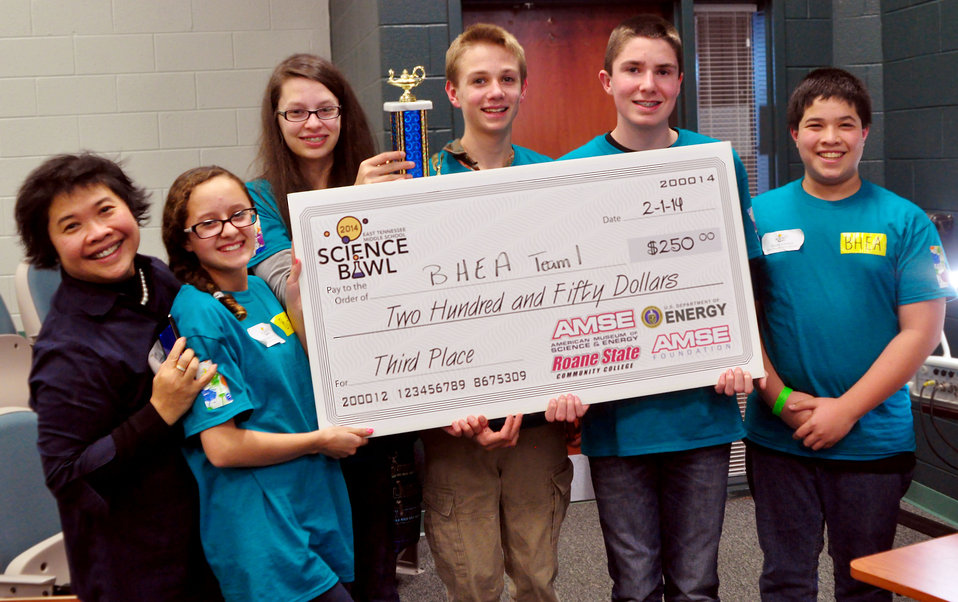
Blount Home Education Association Third Place DOE Middle School Science Bowl

14-017 DOE photo Lynn Freeny 2-1-2014 Oak Ridge Tennessee